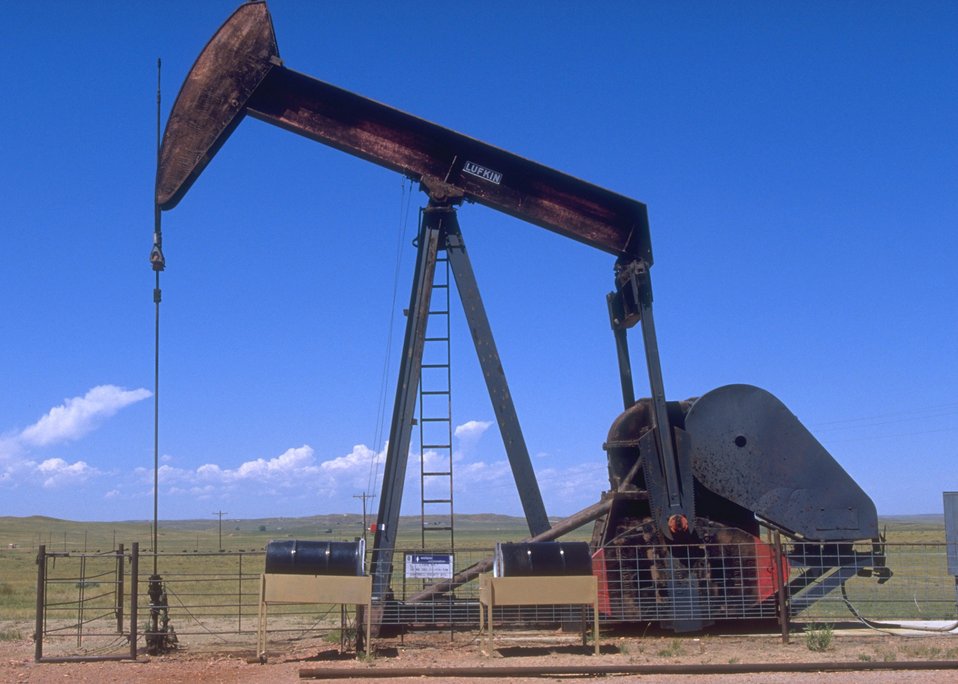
Oil well and associated facilities, Buffalo Field Office.